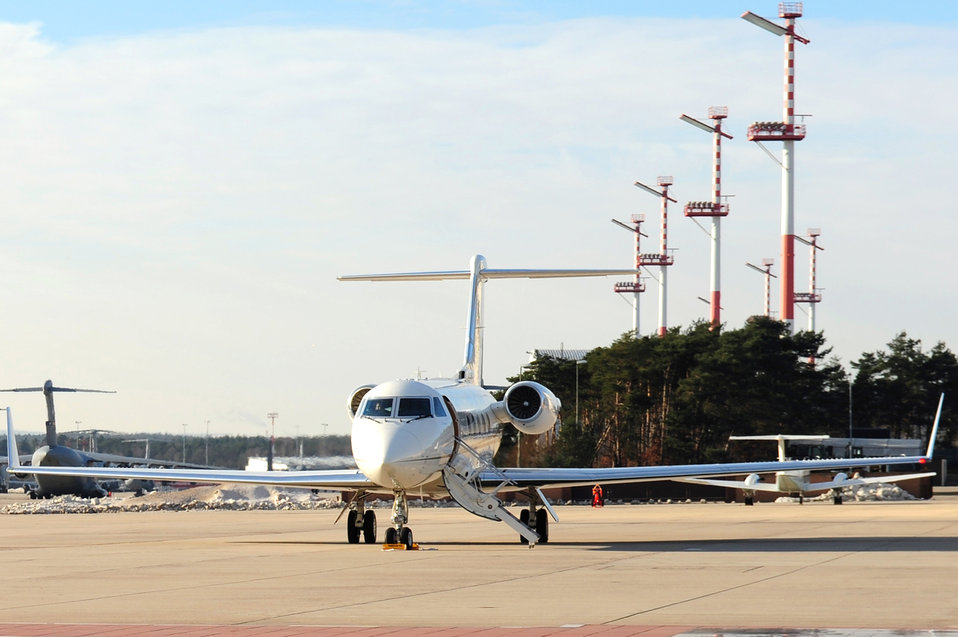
C-37A at Ramstein

The first C-37A assigned to the 76th Airlift Squadron sits on the flightline, Dec. 13, 2010, at Ramstein Air Base, Germany. The aircraft was introduced to team Ramstein to increase the flying capabilities of the distinguished visitor mission.